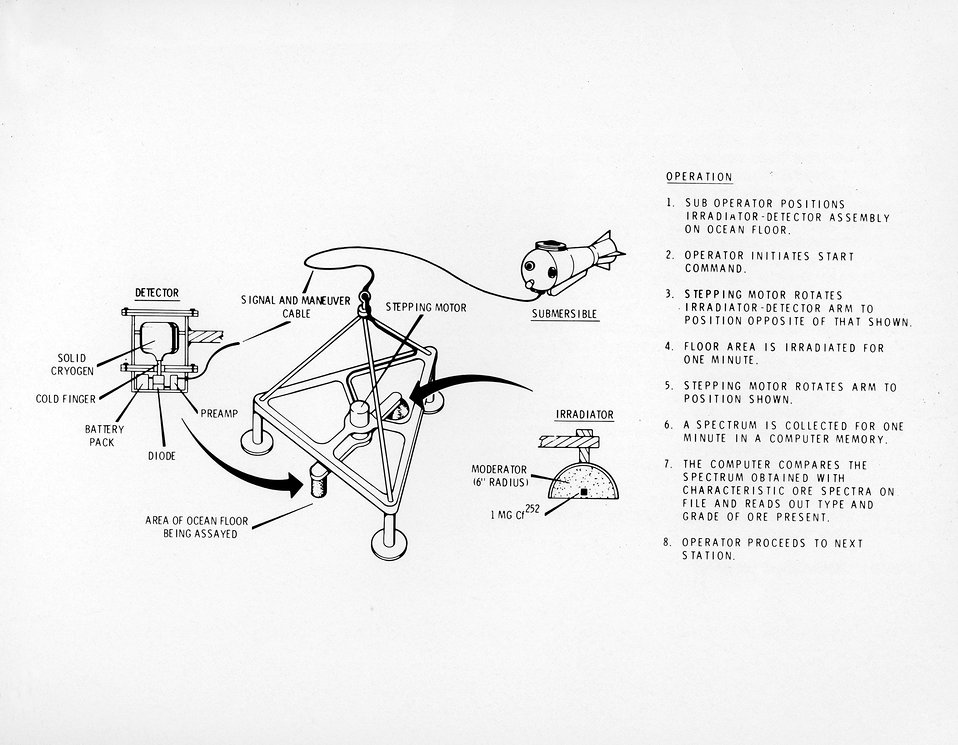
An undersea probe to detect valuable minerals on the ocean floor has been successfully demonstrated by the AECs Pacific Northwest Laboratory. c. 1971